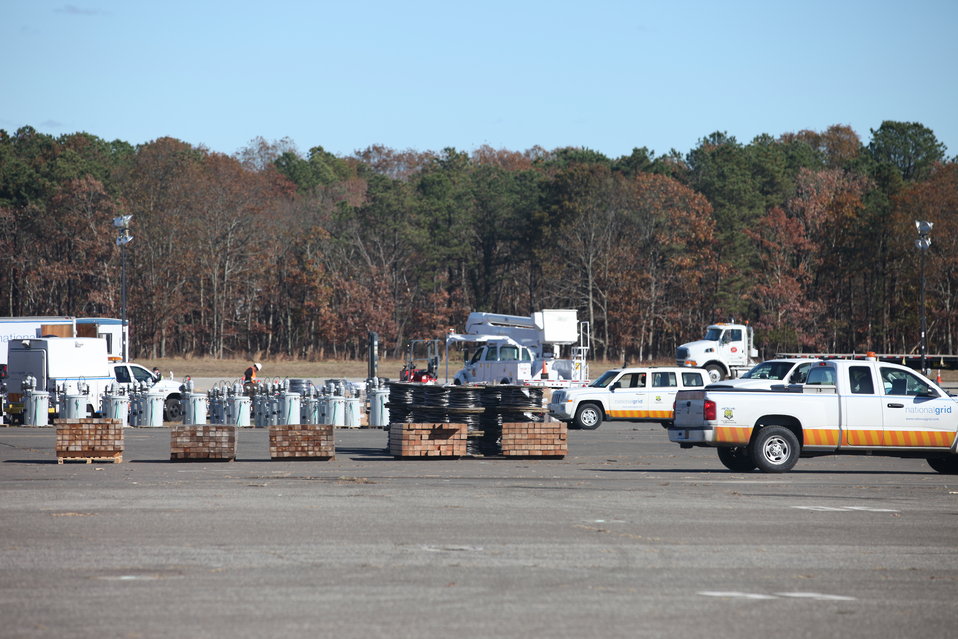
National Grid staging area on Long Island (NY)

National Grid staging area and command center at Brookhaven airport on Long Island, NY in the aftermath of storm Sandy.